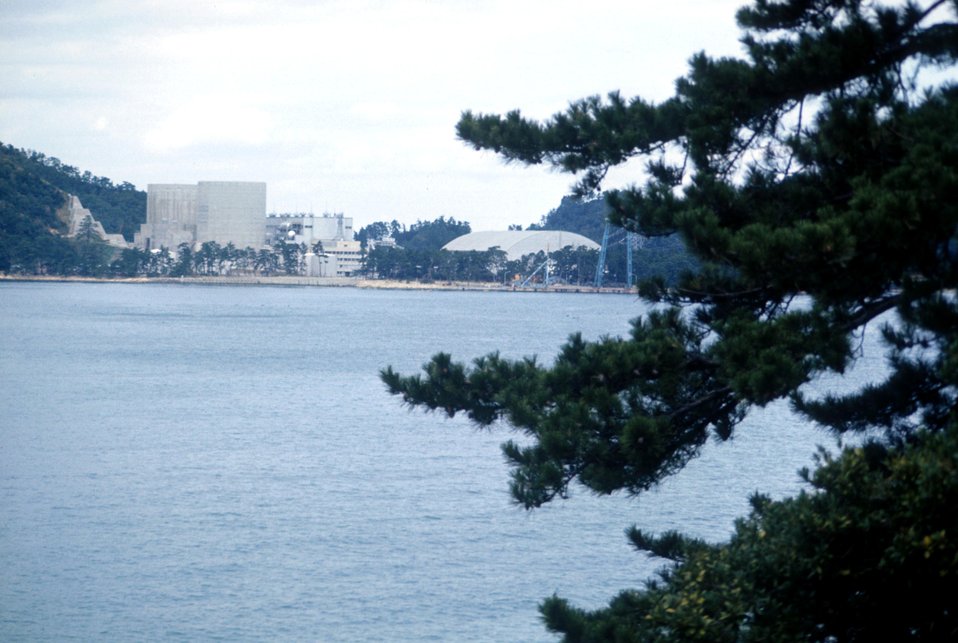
Kansai Plant #1, Mihama, Japan. Kansai Nuclear Reactor.